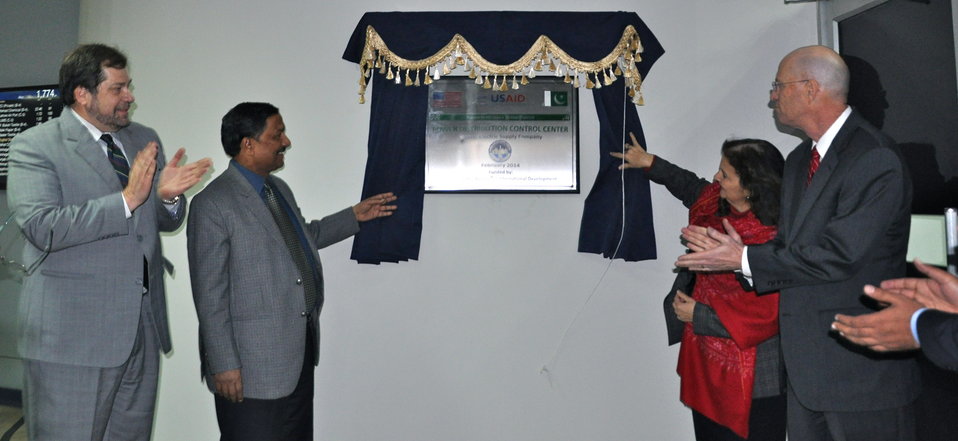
U.S. Improves LESCO’s Capacity to Reduce Load-Shedding (left to right): USAID Provincial Director Jeffrey Bakken, CEO LESCO Muhammad Arshad Rafiq, U.S. Consul General Nina Fite, and USAID Mission Director Gregory Gottlieb inaugurating the Power Distribu

Lahore, February 6, 2014: Marking a milestone in U.S. support to Pakistan’s energy sector, U.S. Consul General Nina Maria Fite inaugurated the Power Distribution Control Center at the Lahore Electric Supply Company (LESCO). The LESCO center was established with support from the U.S. Agency for International Development (USAID) and will enable LESCO to monitor the flow of power through their grid stations. The new meters will verify actual power flow and reduce unplanned load-shedding.

“This project will provide real-time access to electricity load data to managers of Pakistan’s electricity grid and help LESCO overcome unscheduled load-shedding,” said Consul General Fite. “The U.S. Government and the American people are committed to assisting the Government of Pakistan to improve the power distribution system throughout Pakistan. We partner with power distribution companies to improve their operations, reduce losses, and ultimately make sure that the Pakistani people have a more reliable power supply.”

Unplanned load-shedding is one of the leading challenges in the country’s power crisis, costing Pakistan an estimated two percent of its Gross Domestic Product and 400,000 jobs in 2012. Load-shedding is a consequence of the imbalance between electricity generation and demand, and only increased generation will completely eliminate load-shedding. Unscheduled load-shedding, however, is the result of a lack of real-time energy consumption data and can be reduced by improved monitoring systems, such as the USAID project inaugurated at LESCO.

USAID’s five-year Power Distribution Program seeks to work jointly with government-owned DISCOs in Pakistan to improve their performance, reducing losses and improving revenues and customer services. Through this program and many others, the United States provides assistance to the Government of Pakistan in its efforts to reform the power sector and end the current energy shortfall.

More information about the Power Distribution Program can be found on the program’s website at pdip.pk